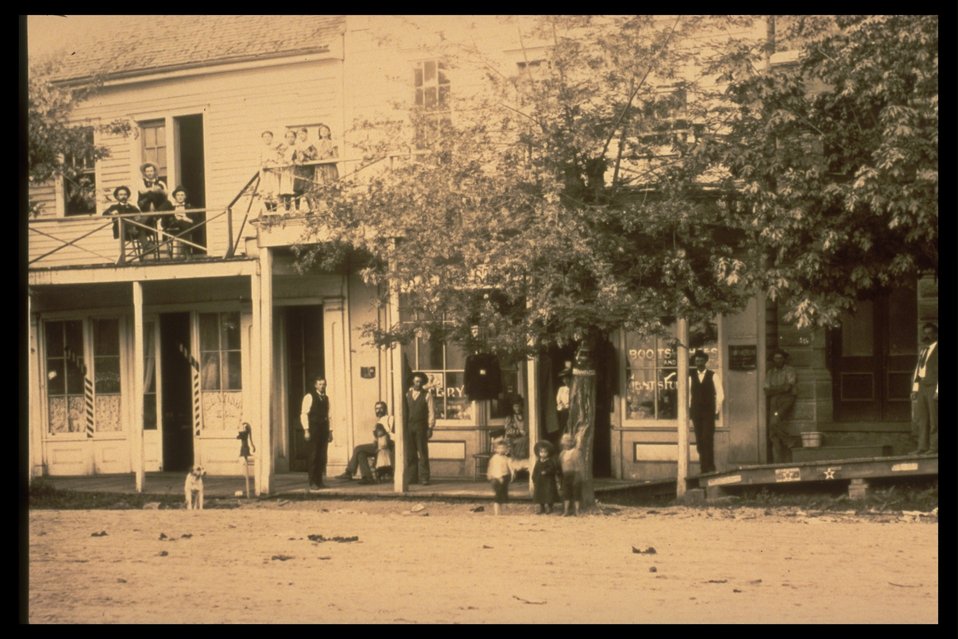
Black and white photo of old store fronts with people.